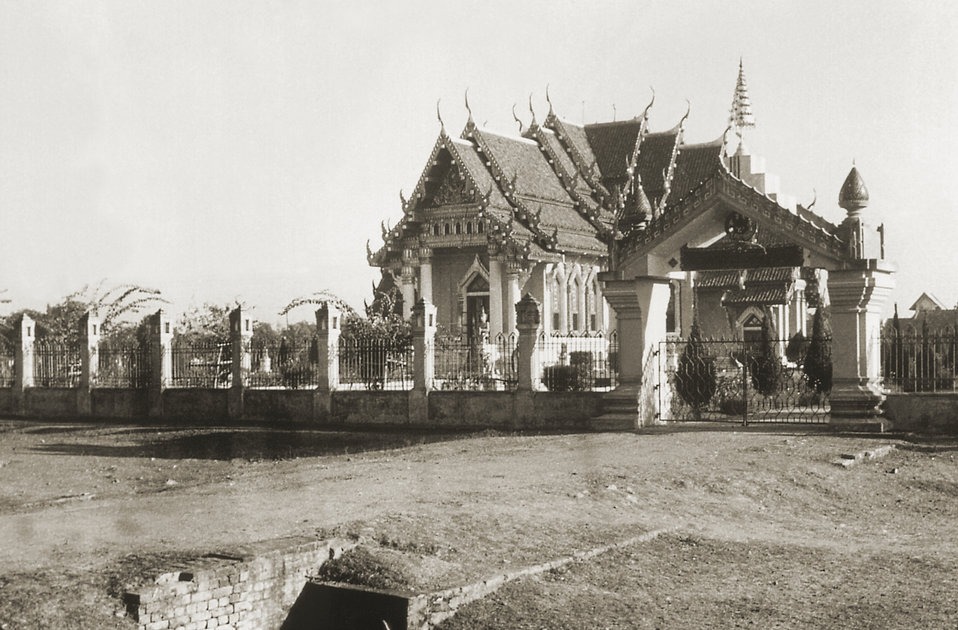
This 1975 image depicts the exterior of the Thai Buddhist temple located in the Bodh Gaya, or the holy pilgrimage site, in the Gaya district inside the Indian State of Bihar.